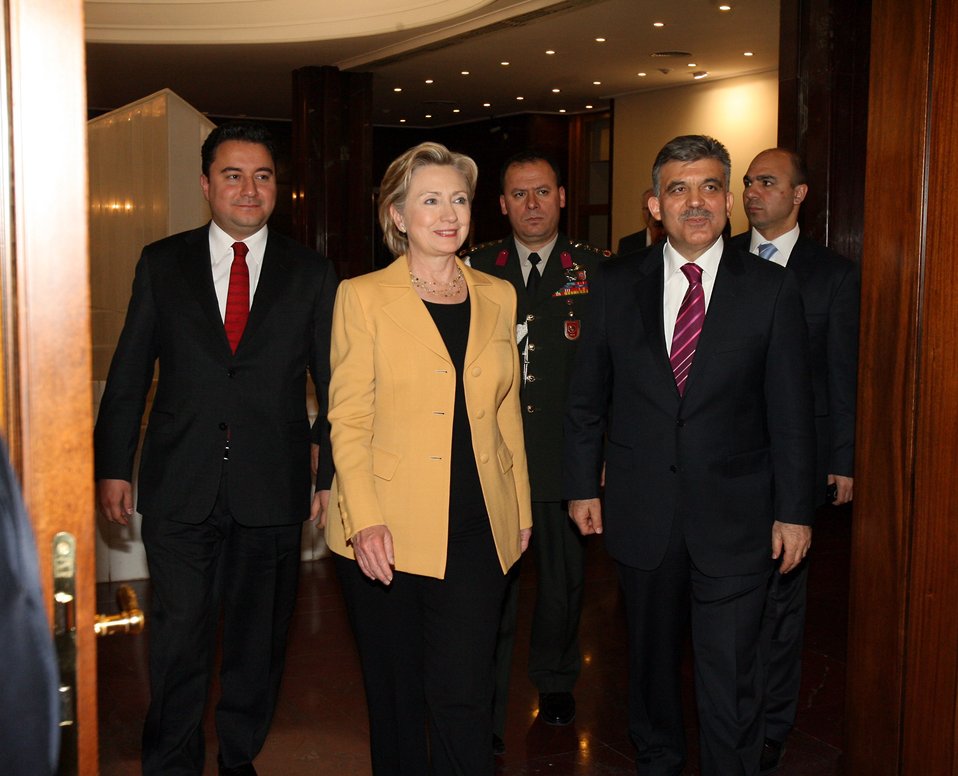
Secretary Clinton Visits Presidential Palace in Ankara

U.S. Secretary of State Hillary Rodham Clinton with Foreign Minister Ali Babacan (left) and President Abdullah Gul (right) at the Presidential Palace in Ankara, Turkey March 7, 2009.